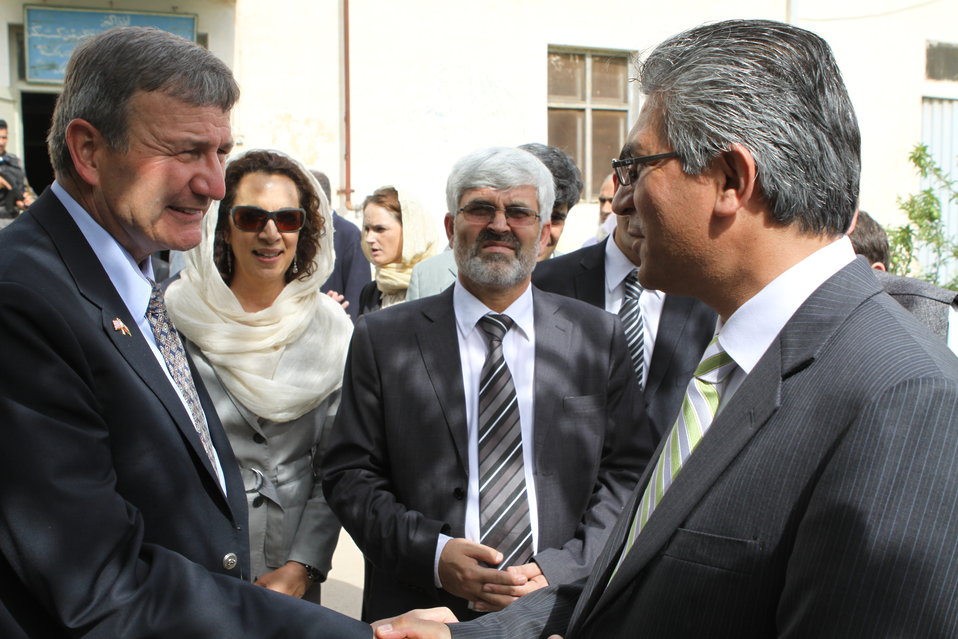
100525 Hirat Textile Company 782